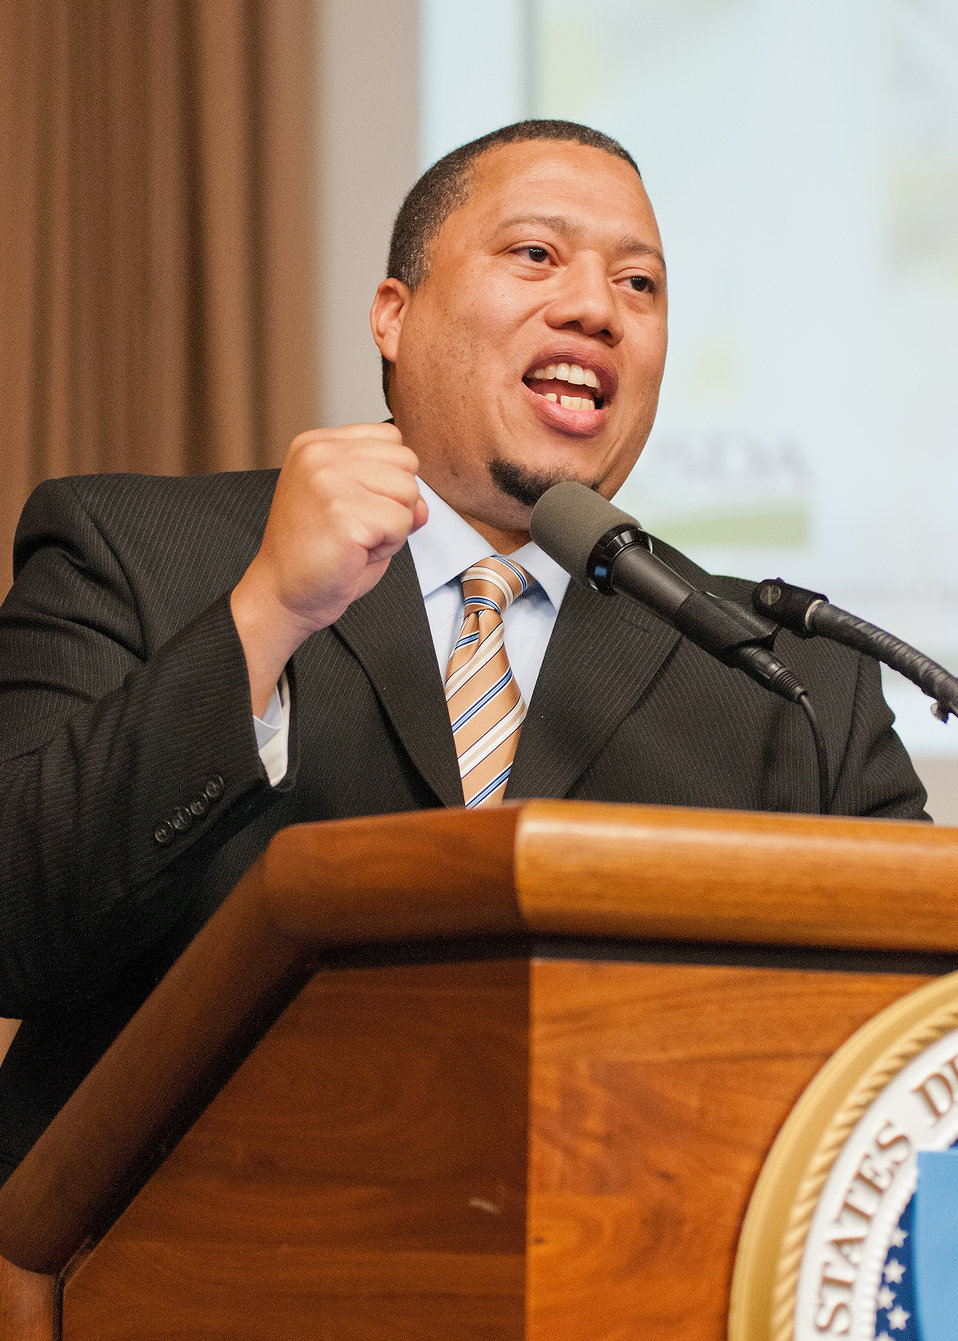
U.S. Equal Employment Opportunity Commission (EEOC) Office of Federal Operations Federal Sector Programs Directo Dexter Brooks speaks EEOC Government Wide Initiatives at the First Annual All Hands Special Emphasis Program Managers (SEPM) Meeting at the U.S. Department of Agriculture Jefferson Auditorium in Washington, D.C. on Wednesday, Mar. 13, 2013.